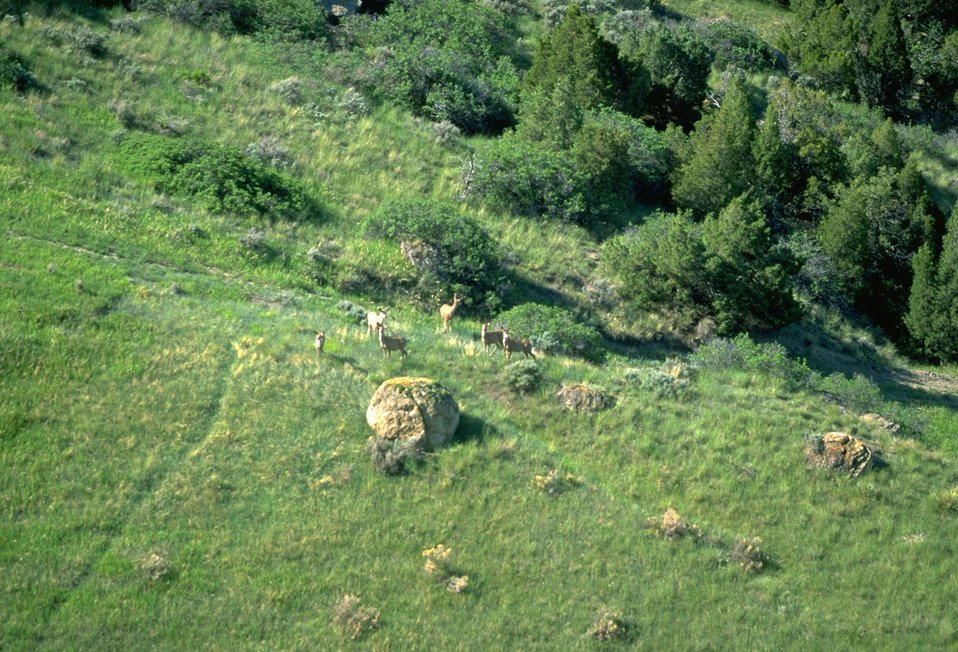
Mule Deer in the Four Dances Natural Area